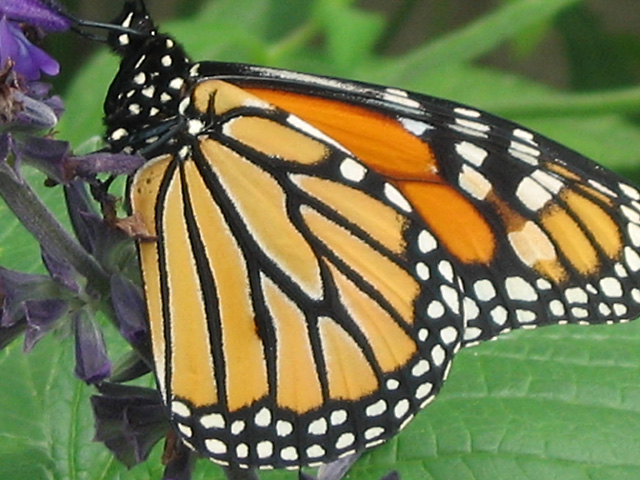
A monarch butterfly collects nectar from a flower. Butterflies are one of nature’s many pollinators for flowers and crops and are crucial in production for fruits and vegetables.